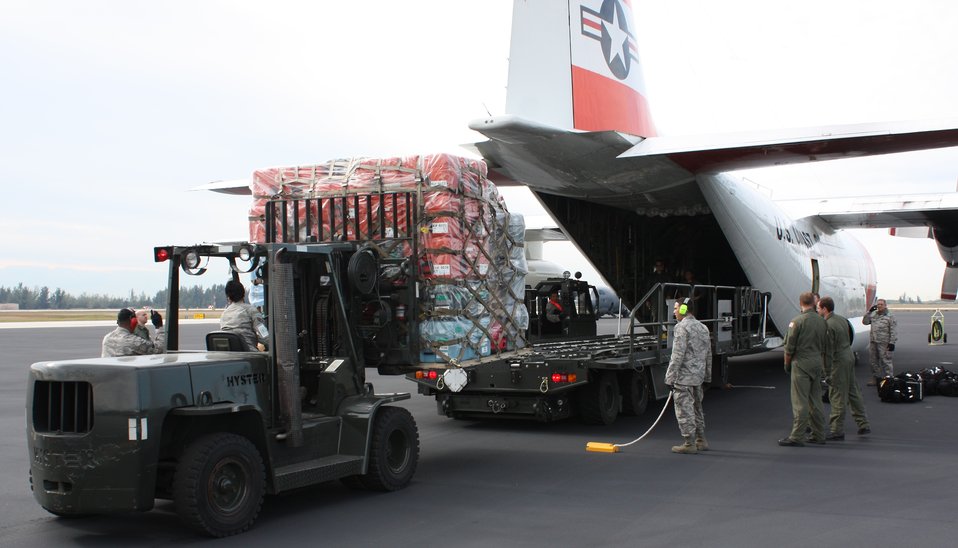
Haiti relief

Reservists from the 70th Aerial Port Squadron, load eqipment for the South Florida Urban Search and Rescue FL-TF 2 Team for deployment to Haiti on a U.S Coast Guard C-130 on Jan.14.